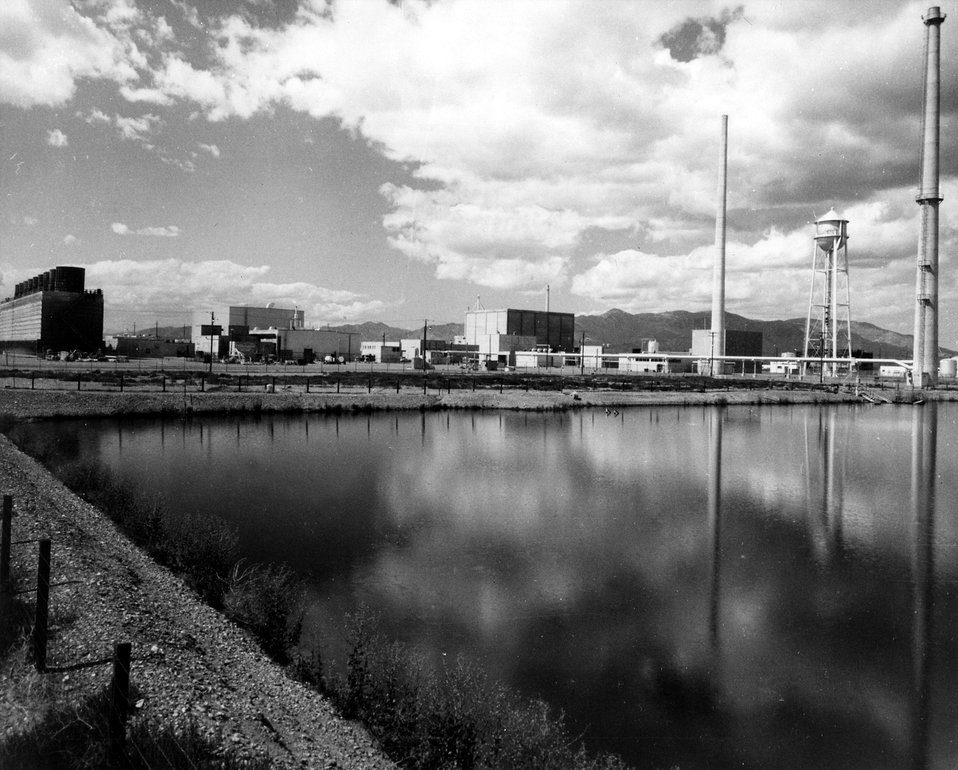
Test Reactor Area at the U.S. Atomic Energy Commission's National Reactor Testing Station in Idaho with holding pool for low level radioactive wastes. Circa 1974.